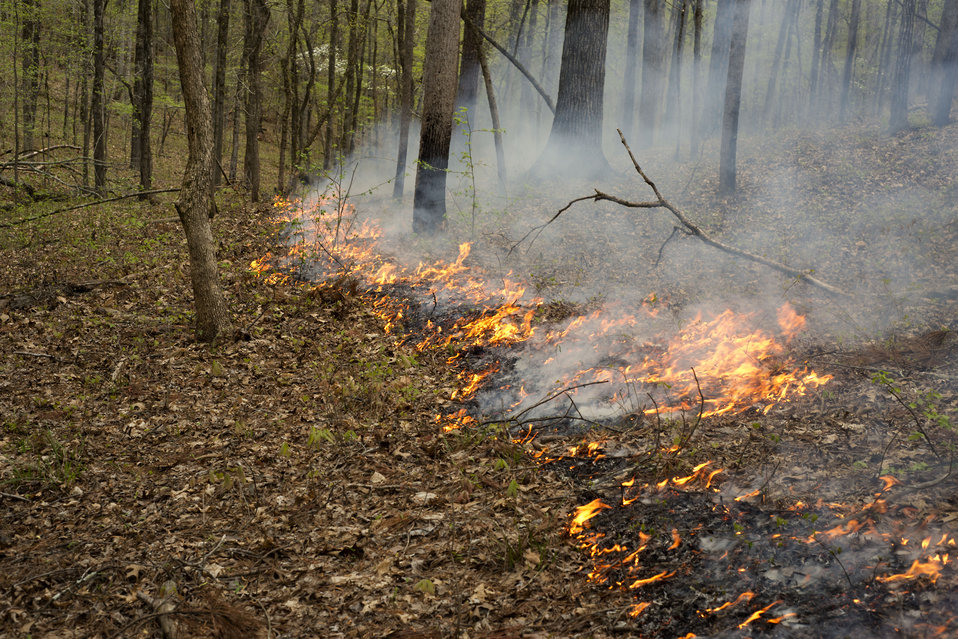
Piedmont C26 Prescribed Fire

On April 9th 2014 USFWS firefighters at Piedmont NWR conducted a 357 acre prescribed fire to help reduce the risk of wildfire and improve habitat. The area burned contains mostly hardwoods with some pine stands intermixed. This unit needs frequent fire to help transition to more open understory with more pine which will improve Red Cockaded Woodpecker habitat on the refuge.